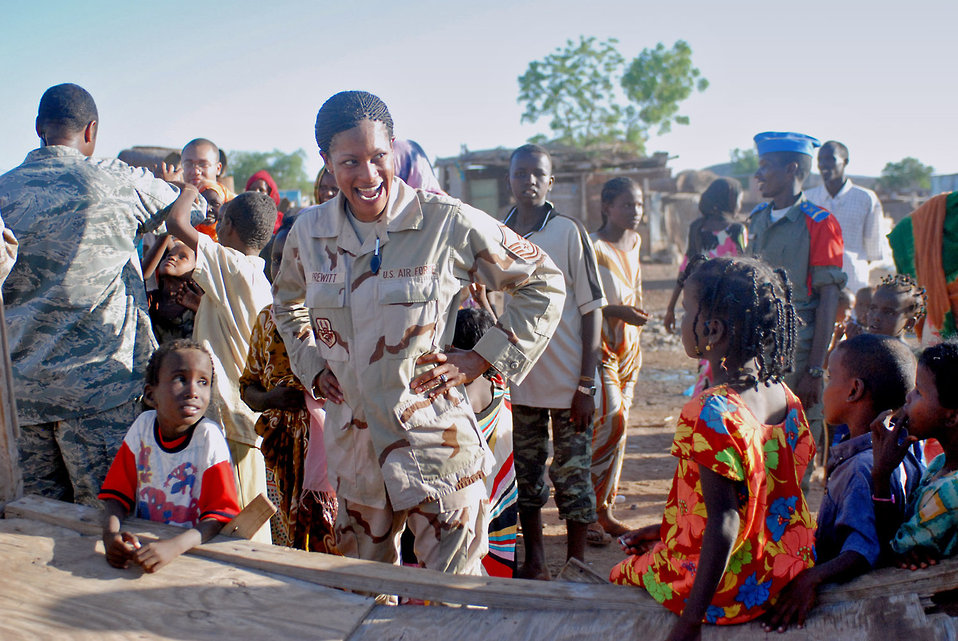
Airmen, Marines team up for Djibouti humanitarian mission

Master Sgt. Shani Prewitt laughs with the children of Nagad, Djibouti, following a performance in the village Oct. 23. Sergeant Prewitt is a vocalist with the U.S. Central Command Air Forces' Expeditionary Band Live Round. The band is touring Djibouti to perform a series of morale and community outreach concerts.